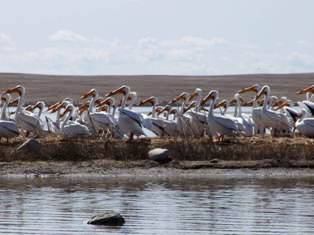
American White Pelicans

American White Pelican nest in Lake Bowdoin on various islands at Bowdoin National Wildlife Refuge in Montana. The favorite island by the pelicans is Woody Island.